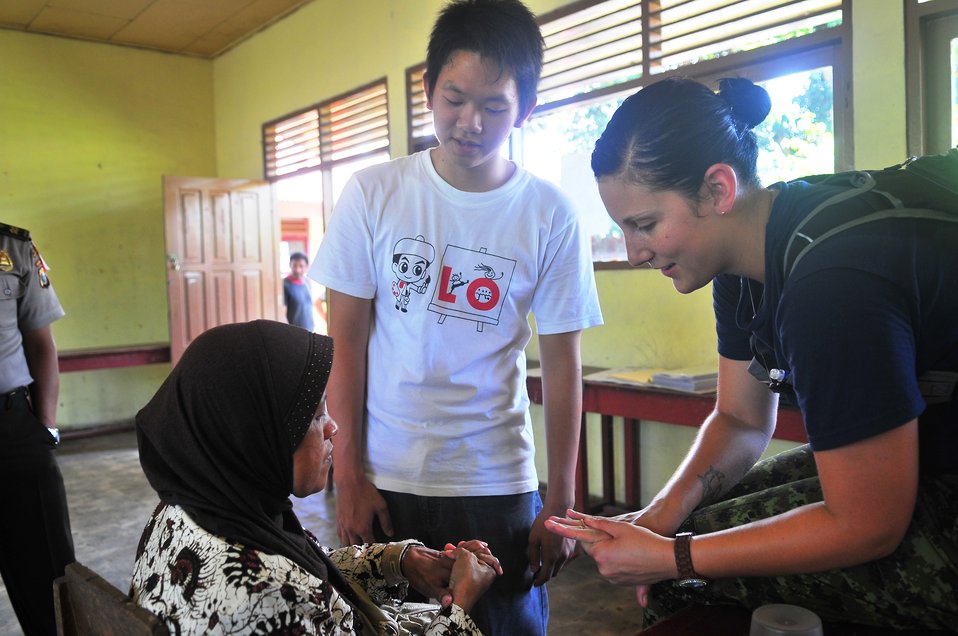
Canadian Air Force Lt. Rebecca Sparkes Screens an Indonesian Woman for Arthritis

Canadian Air Force Lt. Rebecca Sparkes, currently embarked with the Military Sealift Command hospital ship USNS Mercy (T-AH 19), screens an Indonesian woman for arthritis during a medical civic action program at Tobelo School in Tobelo, Indonesia, on July 15, 2010. Pacific Partnership 2010 is the fifth in a series of annual U.S. Pacific Fleet endeavors conducted in Indonesia as a disaster relief exercise to strengthen regional partnerships.